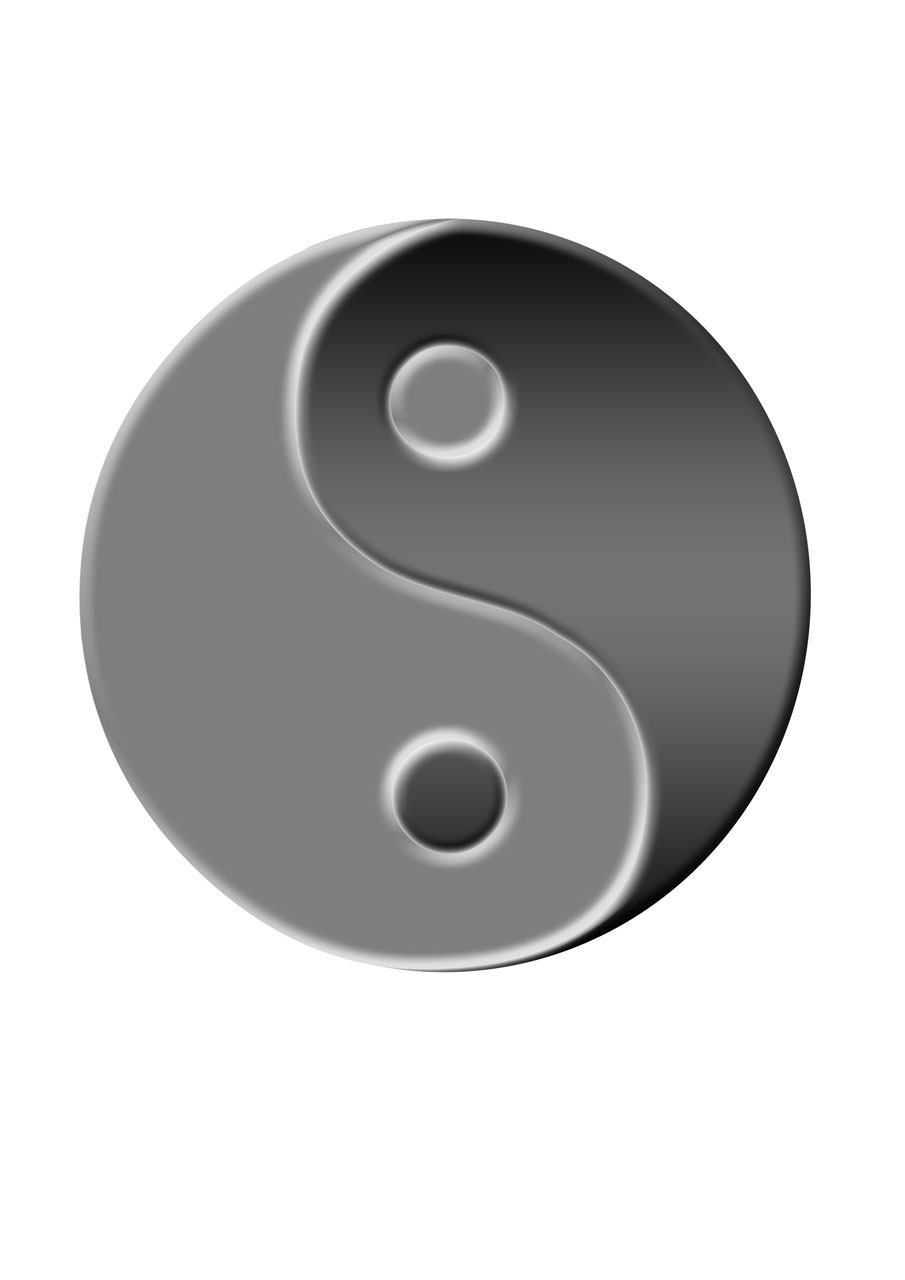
Yin yang on white background.